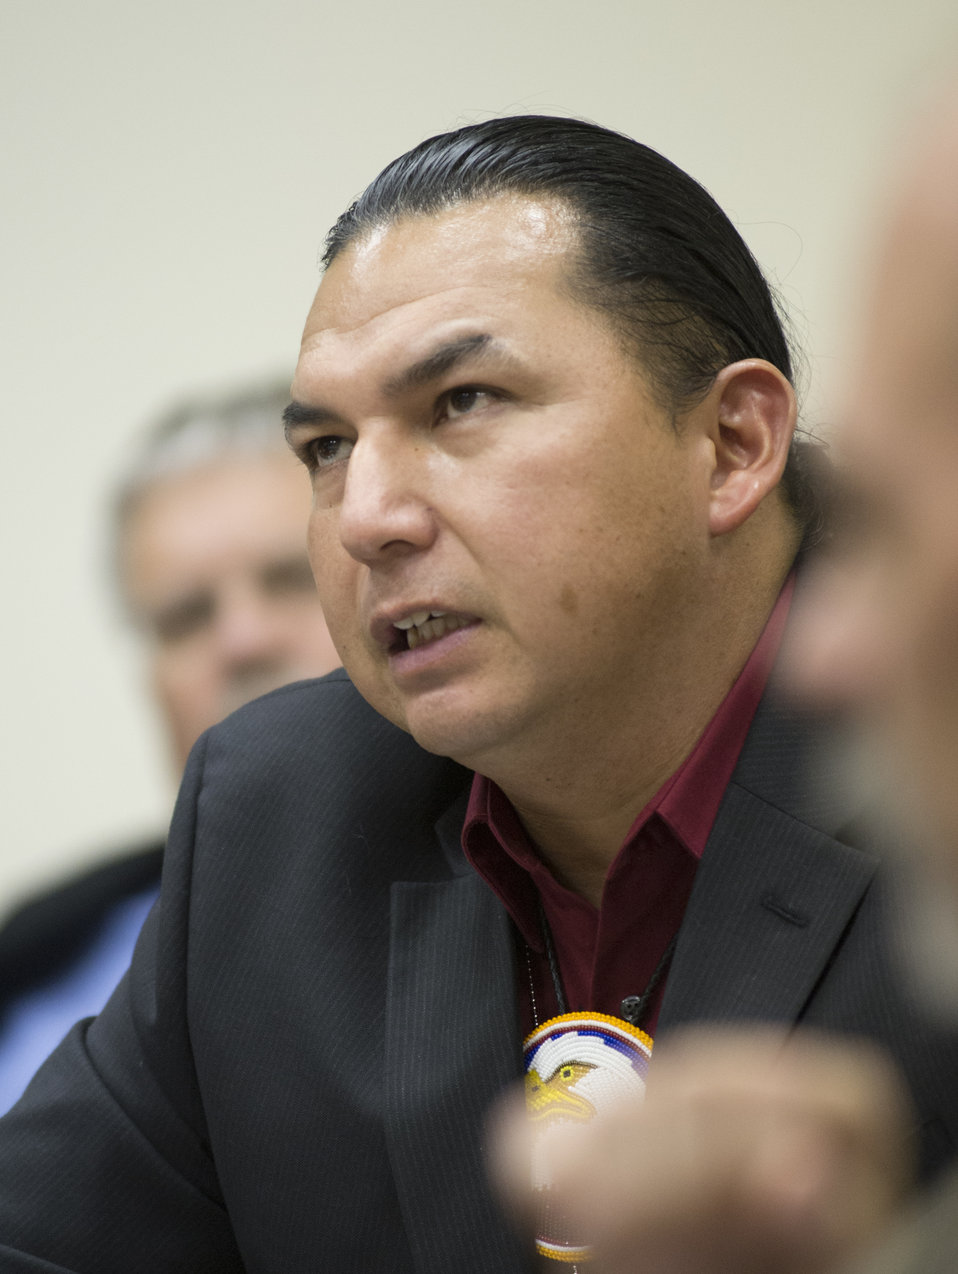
Colville Tribe, WA Council member Ricky Gabriel speaks at a roundtable discussion on Agriculture, Community and Economic Development Opportunities in Indian Country with Agriculture with tribal leaders at the U.S. Department of Agriculture (USDA) in Washington, D.C. on Tuesday, Nov. 12, 2013.